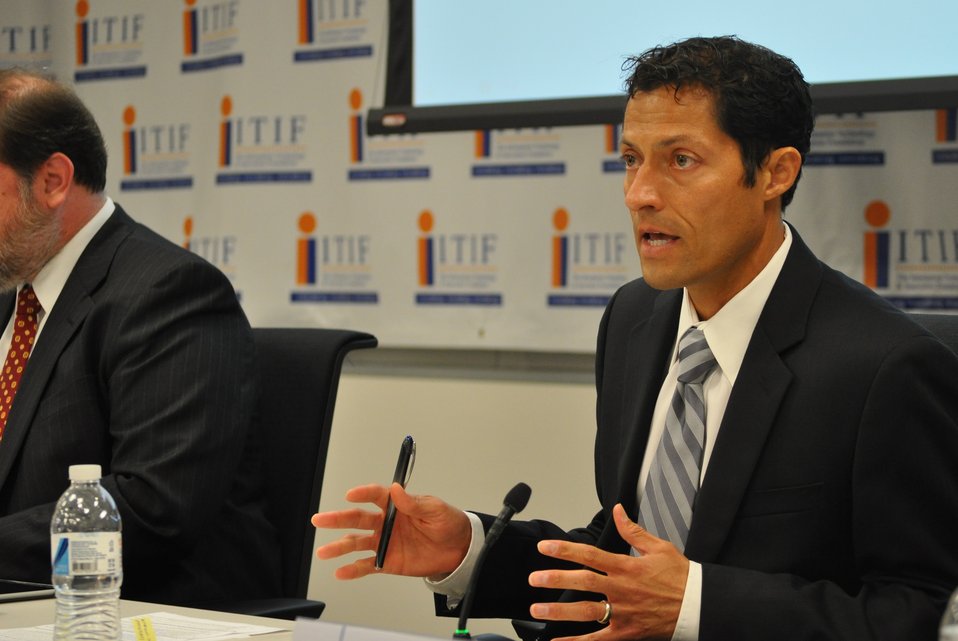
mHealth Task Force Findings and Recommendations Event - DSC 0670